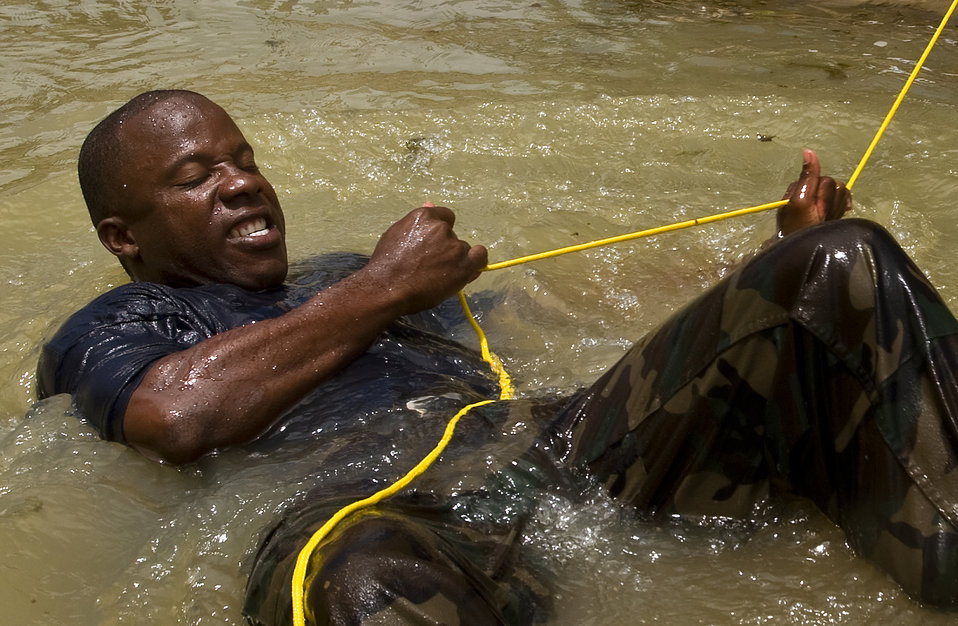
Operation Southern Partner

Constable Allen Abbott of the Royal St. Lucia Police Force's Special Service Unit tries to pull himself to shore while practicing swift-water rescue procedures that were taught by U.S. Air Force pararescuemen June 5 during Operation Southern Partner at La Toc, St. Lucia. Operation Southern Partner is a long term commitment between U.S. and partner nations to share experiences, information, vital skills, tactics and techniques in preparation for future regional challenges that require cooperative solutions.